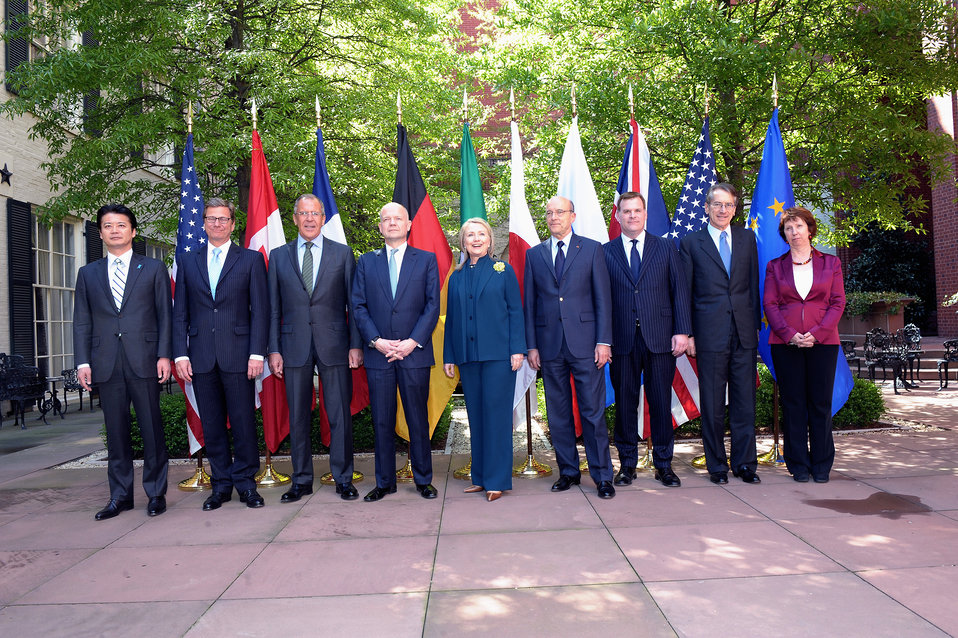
Secretary Clinton Poses for a Photo With G8 Counterparts

U.S. Secretary of State Hillary Rodham Clinton poses for a photo with her G8 counterparts for the G8 Foreign Ministers Meeting at the Blair House in Washington, D.C. on April 11, 2012.